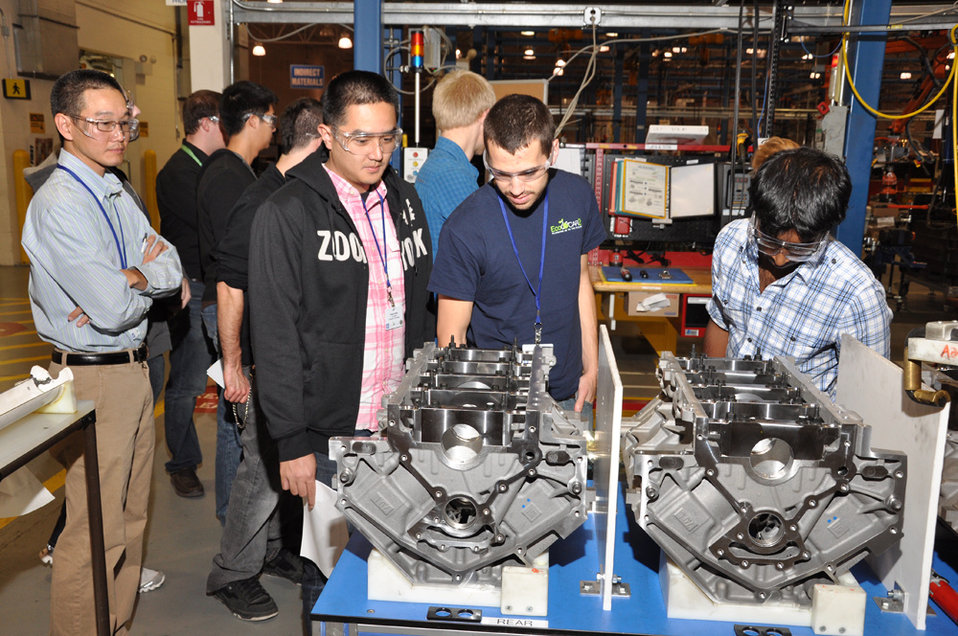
To kick off Year 1 of EcoCAR 2, students attended a four-day workshop packed full of sessions designed to provide students with the skills and knowledge they’ll need over the course of the competition. For example, teams learned how to use math-based design tools to compare and select an advanced vehicle powertrain. They also toured GM’s Powertrain Performance Build Center, where they spent time with highly skilled builders while they had the opportunity to assemble sections of an engine. Pictured here are members of the University of Washington team inspecting a Corvette engine in the Powertrain Performance Build Center. | Photo courtesy of EcoCAR 2.